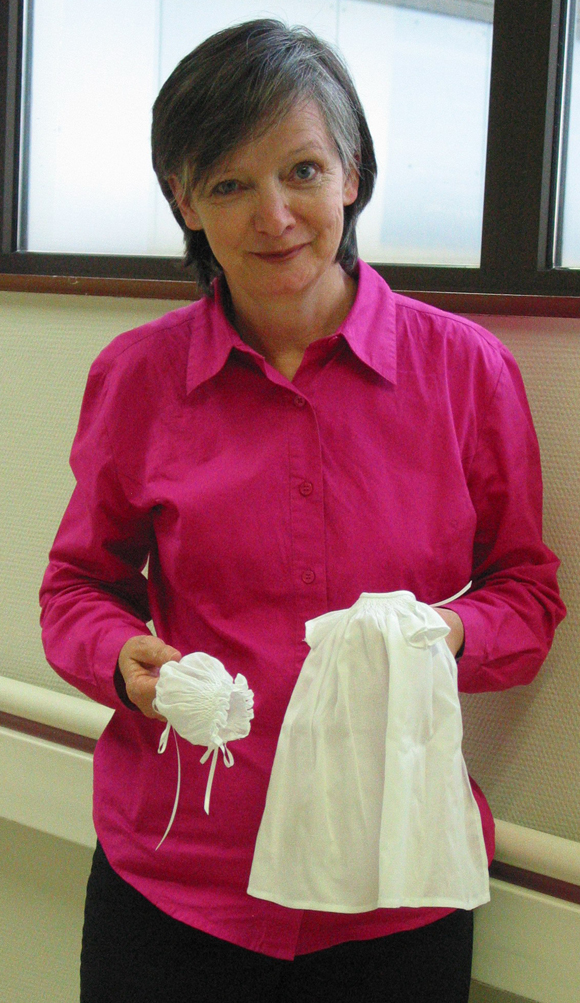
Airmen make history in Iraq

Master Sgt. Corey Turner was a member of the five-person crew that received the Clarence Mackay Trophy, an annual award given for the most meritorious flight of the year by an Air Force person, persons or organization. Sergeant Turner is assigned to the 40th Airlift Squadron at Dyess Air Force Base, Texas. Other crew members are Majs. Michael Frame and Brian Lewis, Pope AFB, N.C.; Senior Master Sgt. John Spillane, Little Rock AFB, Ark.; and Master Sgt. Thomas Lee, Ramstein Air Base, Germany.